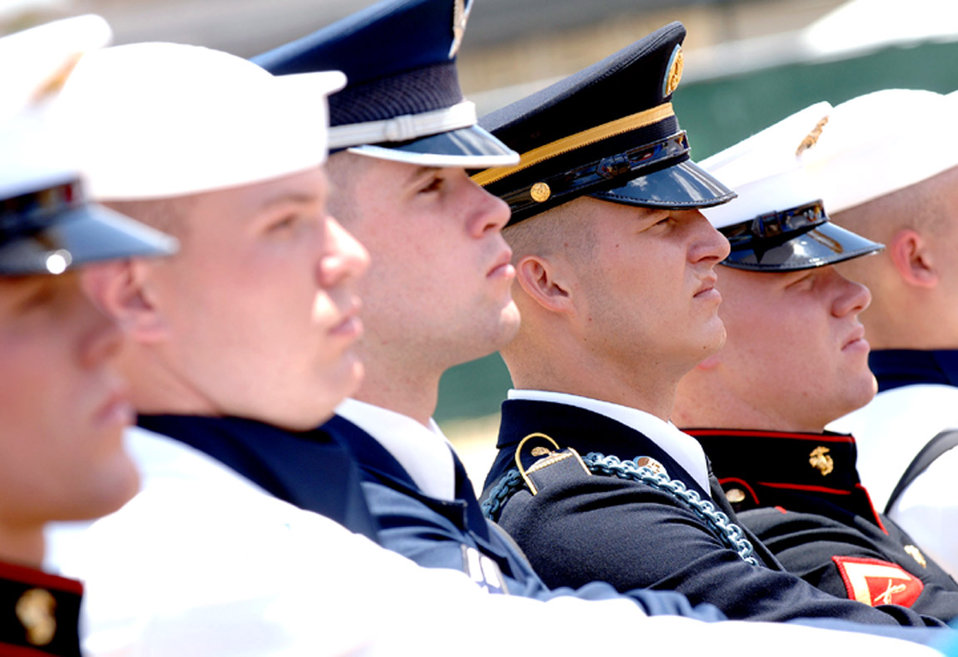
Site dedicated to Pentagon's Sept. 11 victims

The Pentagon Joint Service Honor Guard presents the colors at the ceremony marking the start of construction on the Pentagon Memorial on Thursday, June 15. The memorial will be located at the site where 184 lives were lost when terrorist-hijacked American Airlines Flight 77 crashed on Sept. 11, 2001.